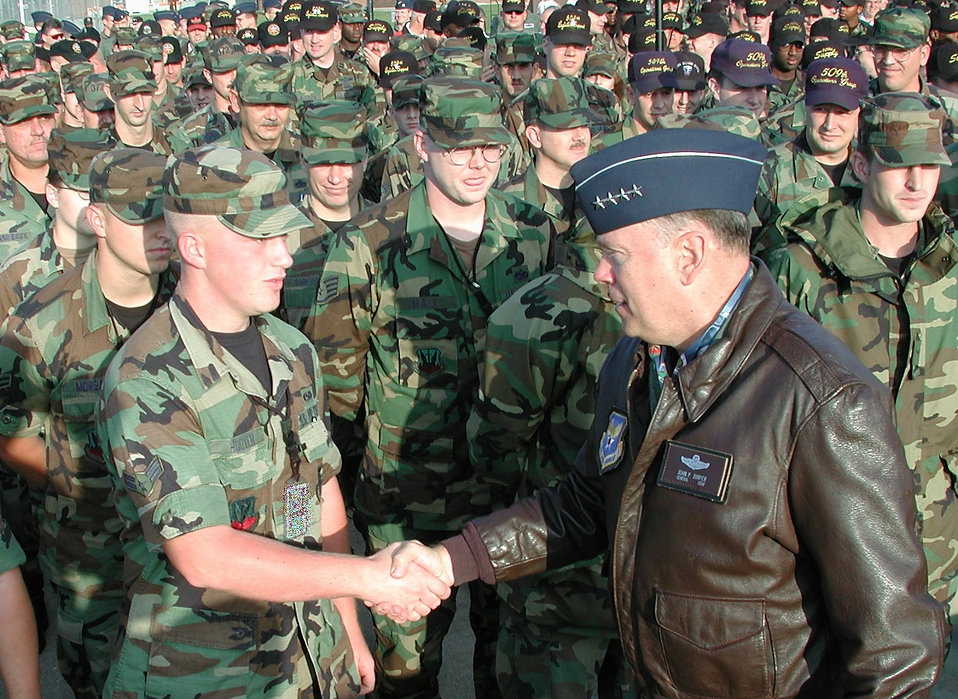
Jumper visit

WHITEMAN AIR FORCE BASE, Mo. -- Gen. John P. Jumper, Air Force chief of staff, thanks the men and women of Whiteman AFB, for all they are doing for the nation, Sept. 20, 2001. Jumper said,